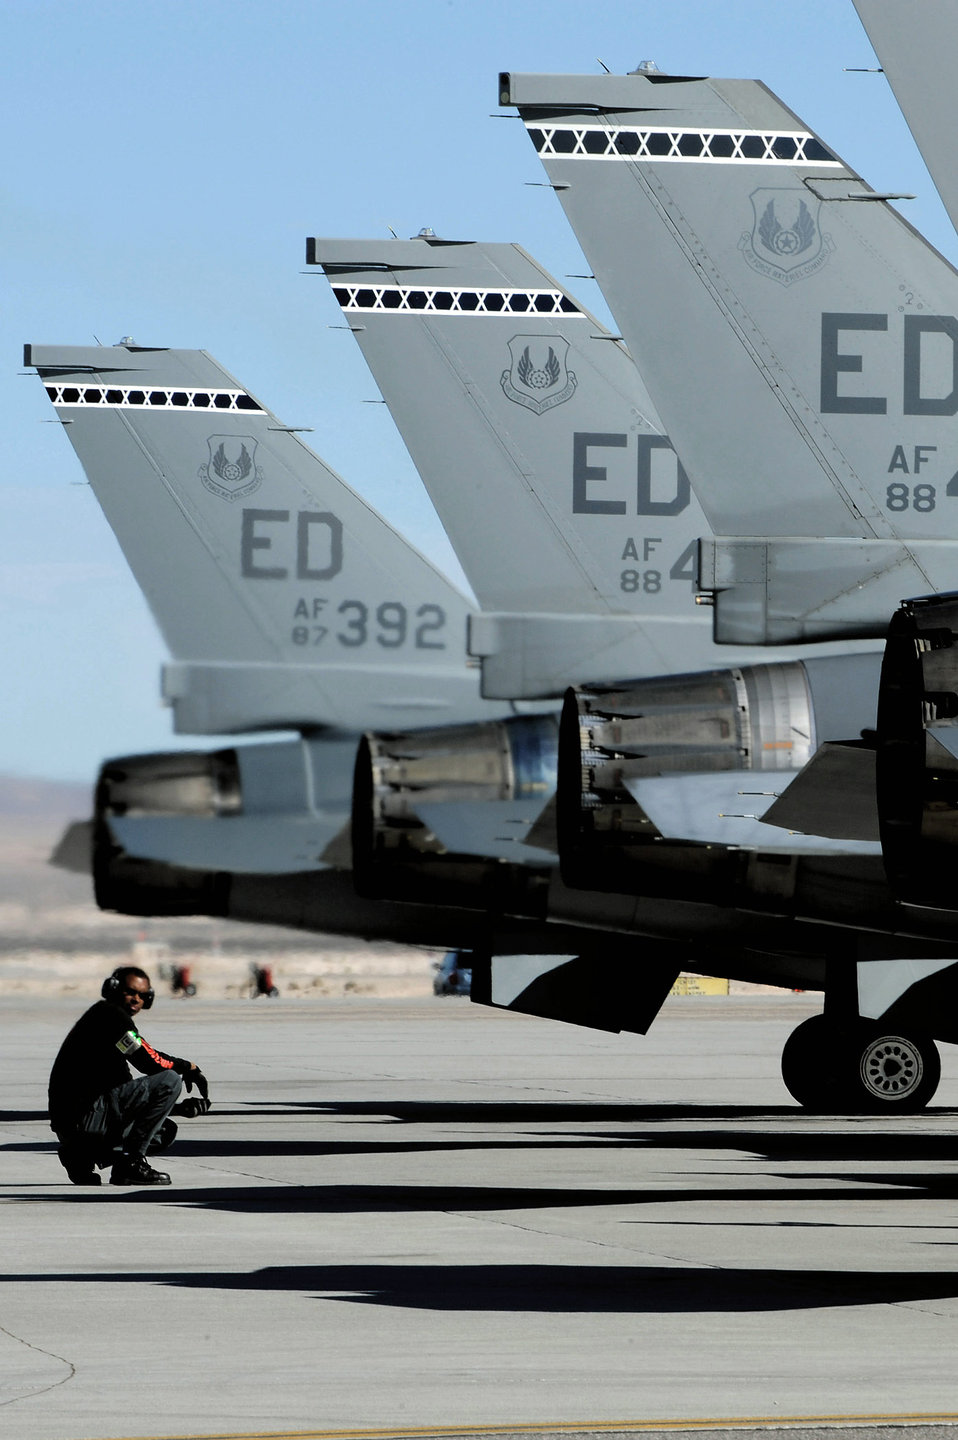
416th FLTS first AFMC unit participates at Red Flag

Robert Macadoo performs preflight inspections on F-16 Fighting Falcons in support of Red Flag 09-2 Feb 4 at Nellis Air Force Base, Nev. Red Flag is a multi-national exercise providing a realistic environment to practice combat scenarios. The experience gained during the exercise is vital to the survival of air crews in combat. Mr. Macadoo is a weapons specialist with the 416th Flight Test Squadron at Edwards Air Force Base, Calif.